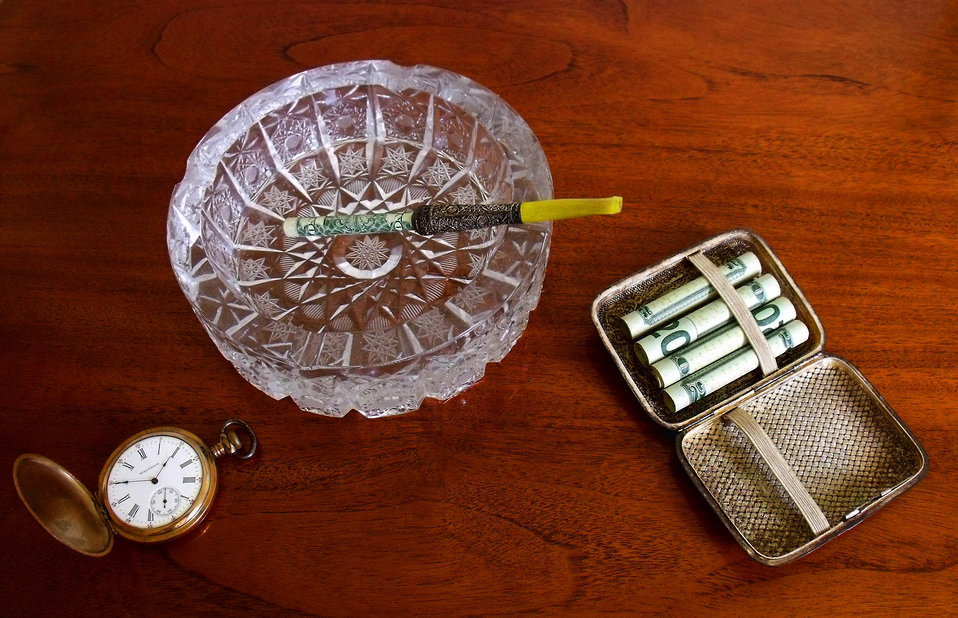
The cost of smoking

Smoking and money.